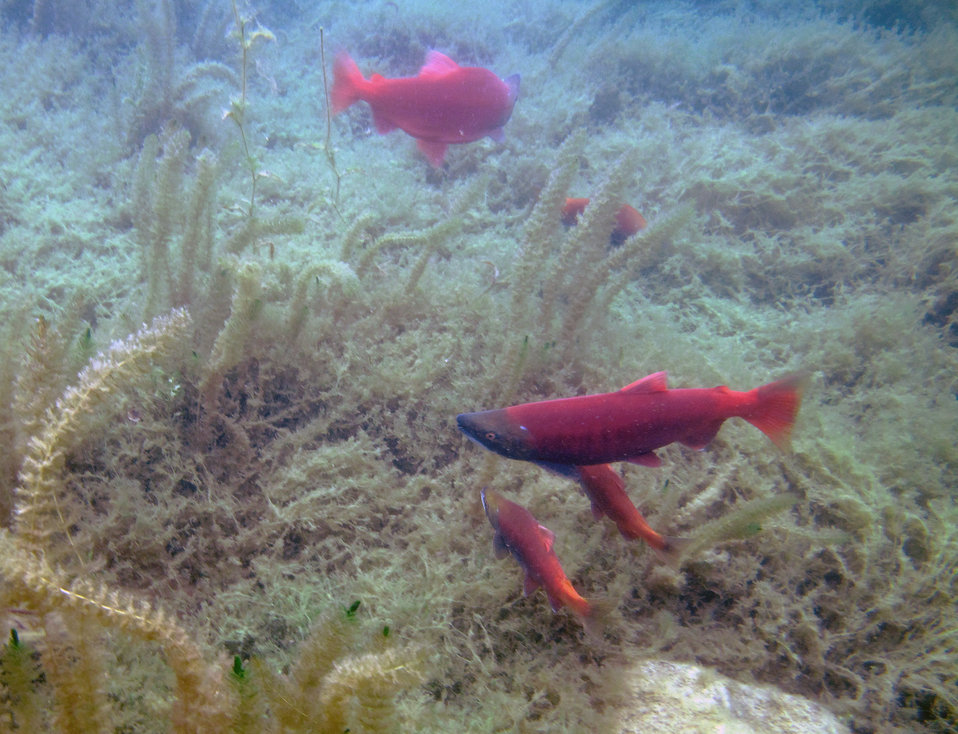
Sockeye life history variation in Hidden Lake